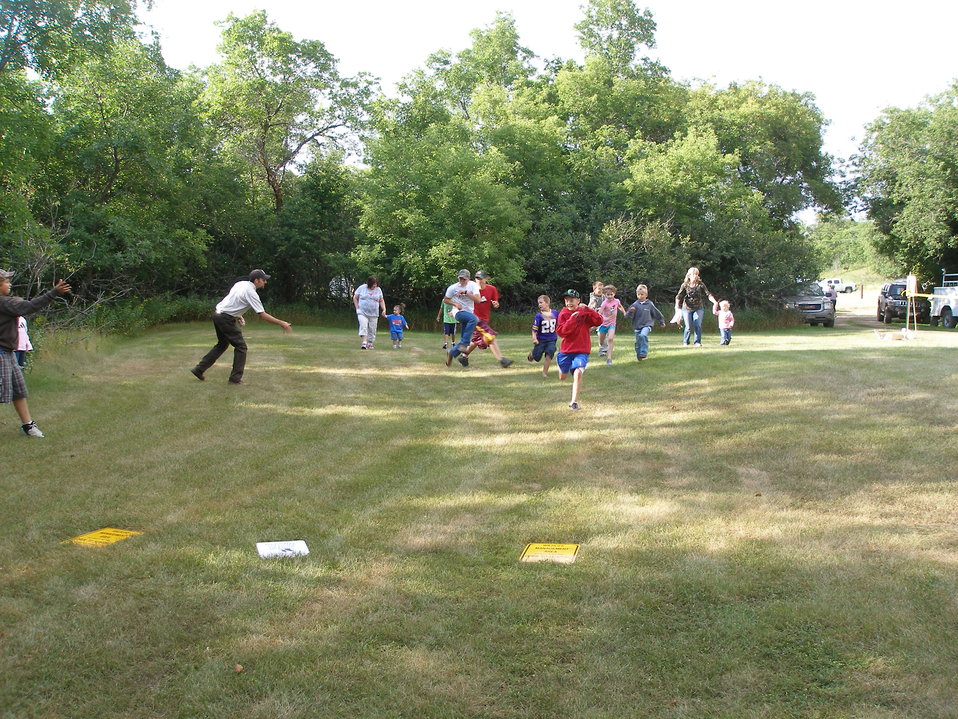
2011 Greenwing Day - Migration Game

Des Lacs National Wildlife Refuge, Tasker's Coulee

'Flying to safety!' Maybe they are heading to Des Lacs Refuge??? :)